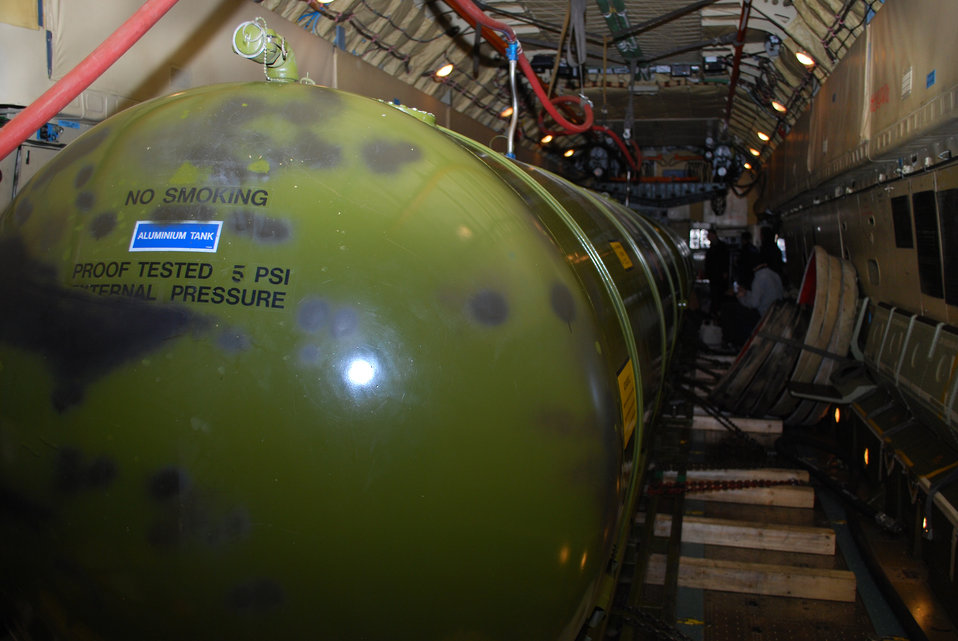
Operation Brilliant Ice 2009

Ukrainians transport fuel March 23 in a Ukrainian IL-76 Ilyushin aircraft to resupply the Danish military outpost, Station Nord, some 600 miles north of Thule Air Base, Greenland, during Operation Brilliant Ice 2009. The fuel was transported in two large aluminum tanks in the cargo bed and in the wings of the aircraft and required 16 trips to complete the delivery. .